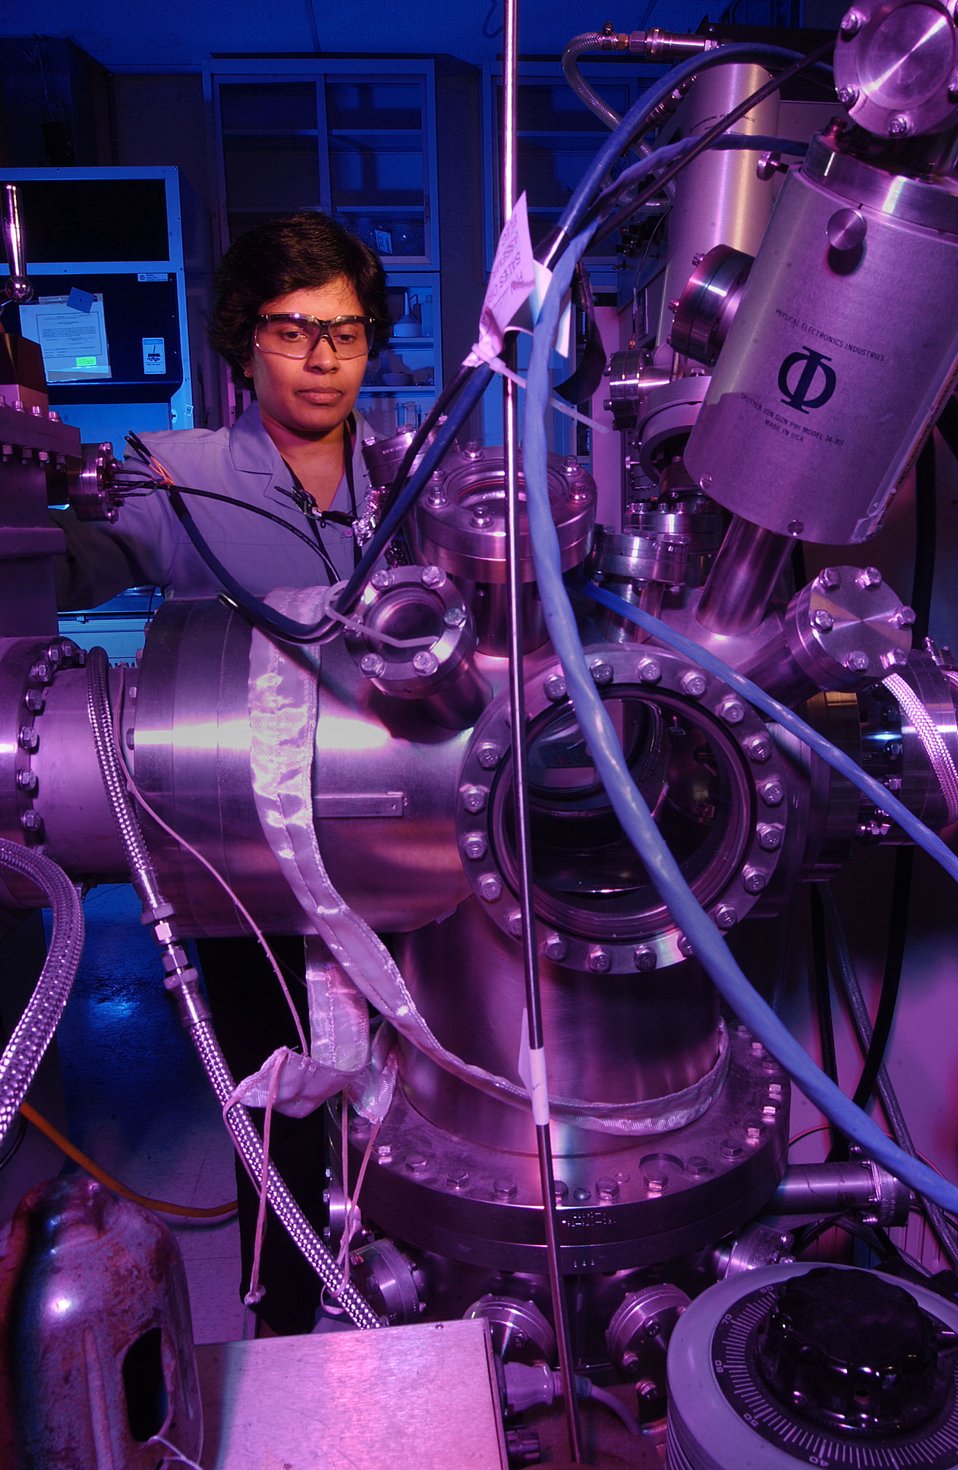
Ranjani Siriwardane working with CO2 sorbent in spectrometer.